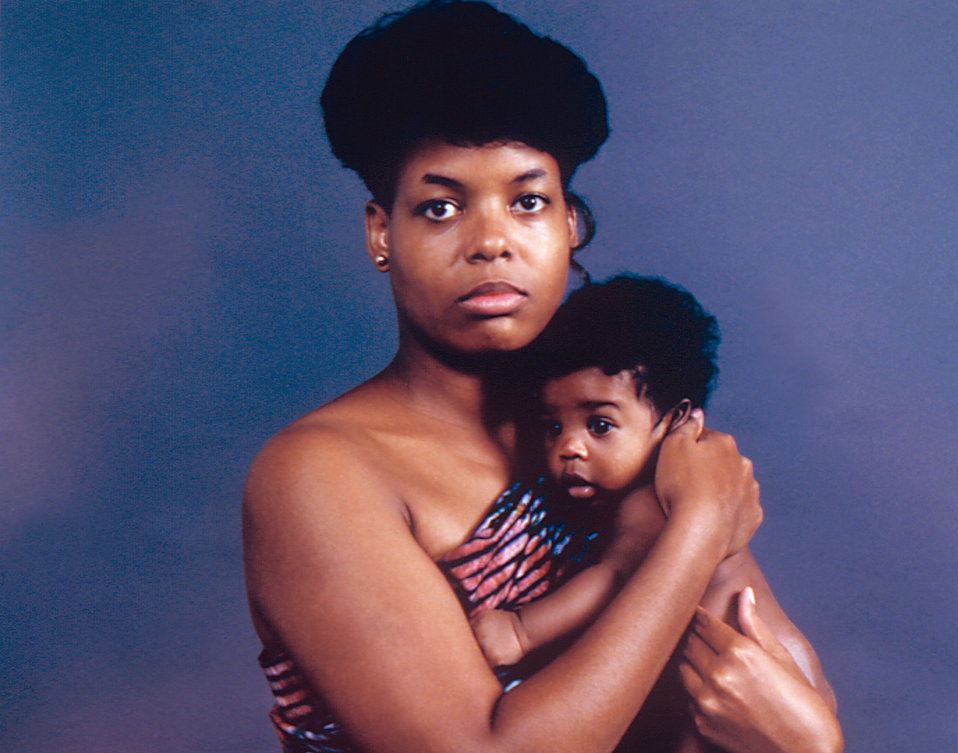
Woman with child.